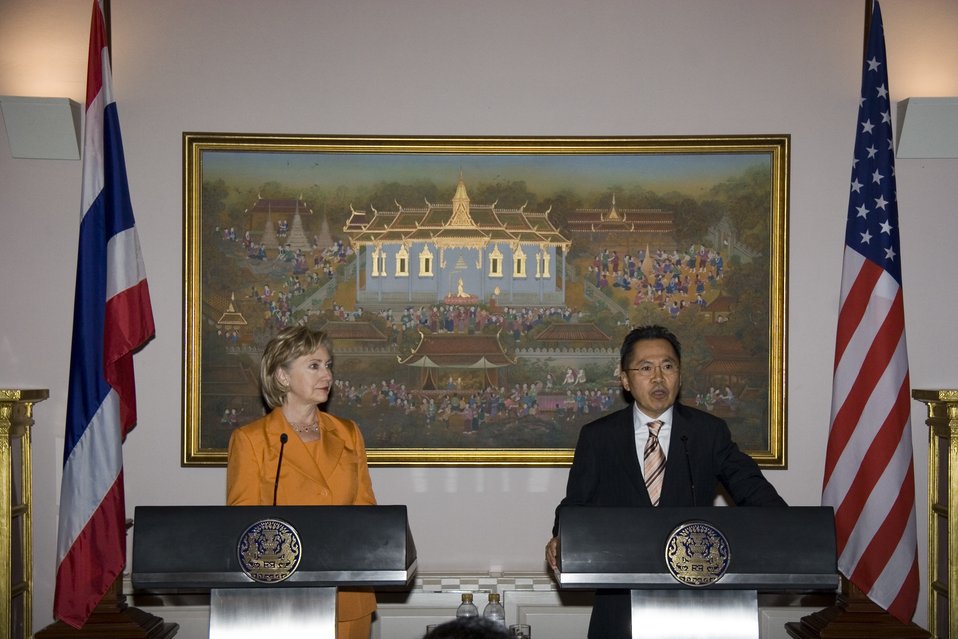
U.S.-Thailand Bilateral Meeting

U.S. Secretary of State Hillary Rodham Clinton and Deputy Prime Minister Korbsak Sabhavasu answer questions from the press following the bilateral meeting at Government House in Bangkok, Thailand July 21, 2009.